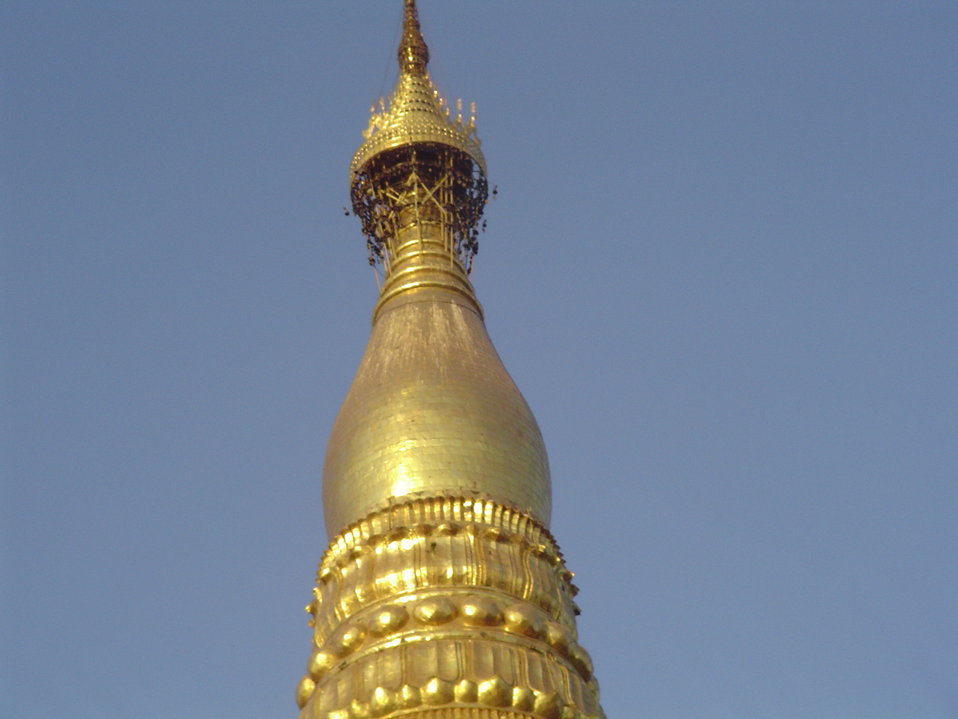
The Shwedagon Pagoda, officially titled Shwedagon Zedi Daw ([ʃwèdəɡòun zèdìdɔ̀]), also known as the Golden Pagoda, is a 98-metre (approx. 321.5 feet) gilded stupa located in Yangon, Burma.